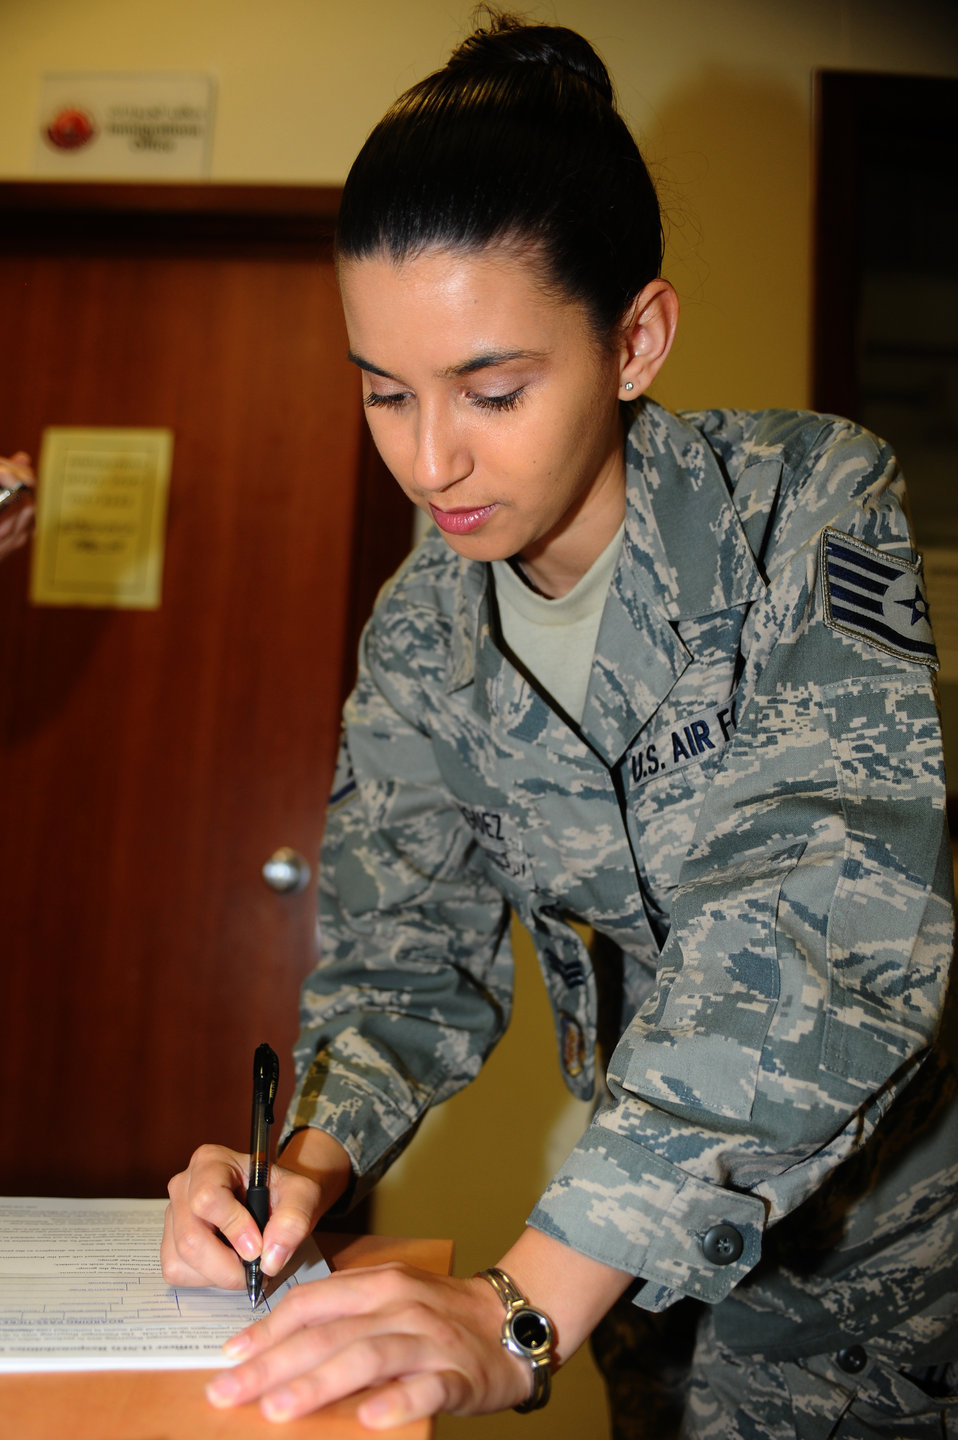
Coordination cell staff briefs servicemembers on host nation issues

Staff Sgt. Diana Rodriguez fills out a boarding pass for a passenger Feb. 17, 2010, at a base in Southwest Asia. Sergeant Rodriguez is a host-nation coordination cell liaison team member.